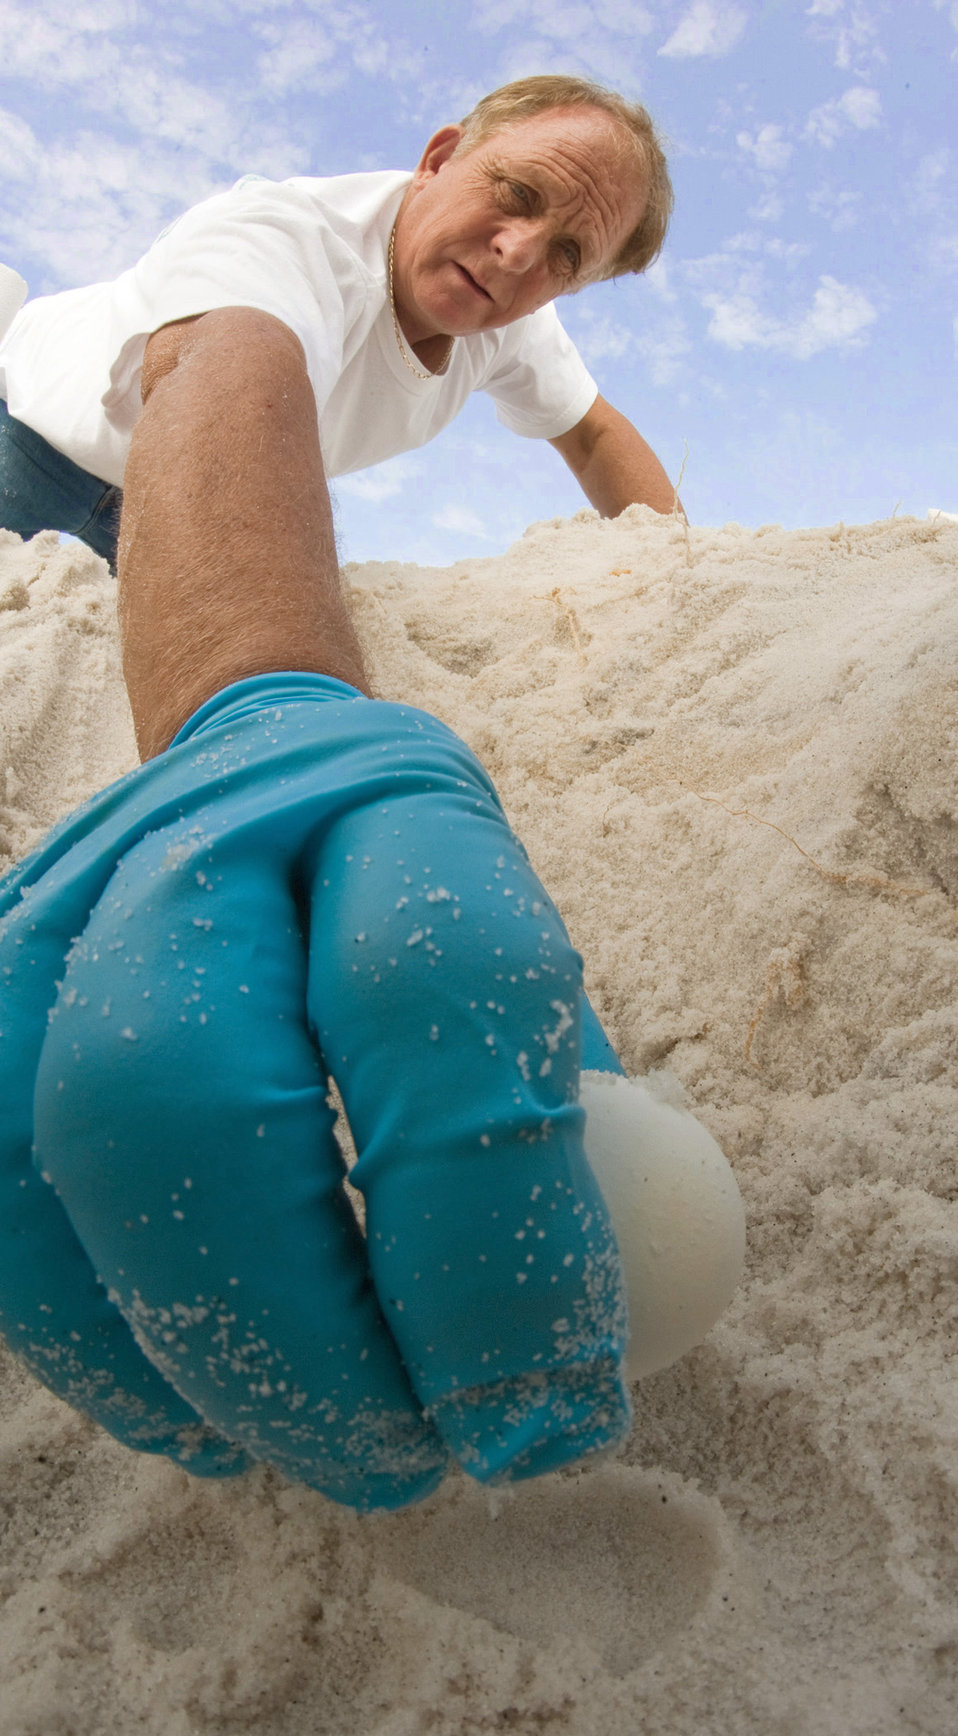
Easy does it

Bob Miller lifts the last of 112 Loggerhead sea turtle eggs from a nest to a cooler lined with beach sand Aug. 9, 2010, at Eglin Air Force Base, Fla. The eggs are being transported to the Atlantic Coast, where they will be allowed to hatch in the cooler at a controlled climate facility. Wildlife technicians then will release them into the ocean. Mr. Miller is the Sea Turtle Program Manager with the 96th Civil Engineer Squadron.